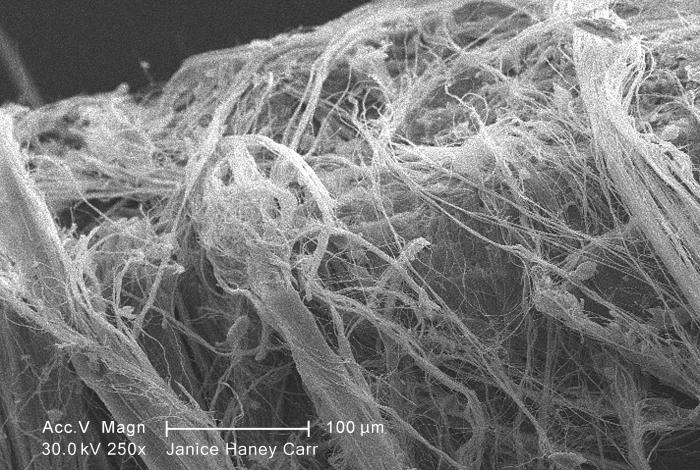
Under a moderate magnification of 250X, this scanning electron micrograph (SEM) revealed some of the microcrystalline ultrastructure exhibited by a piece of raw chrysotile, or white asbestos, which had been excavated from the Lowell Asbestos Mine on Belvidere Mountain, Vermont.